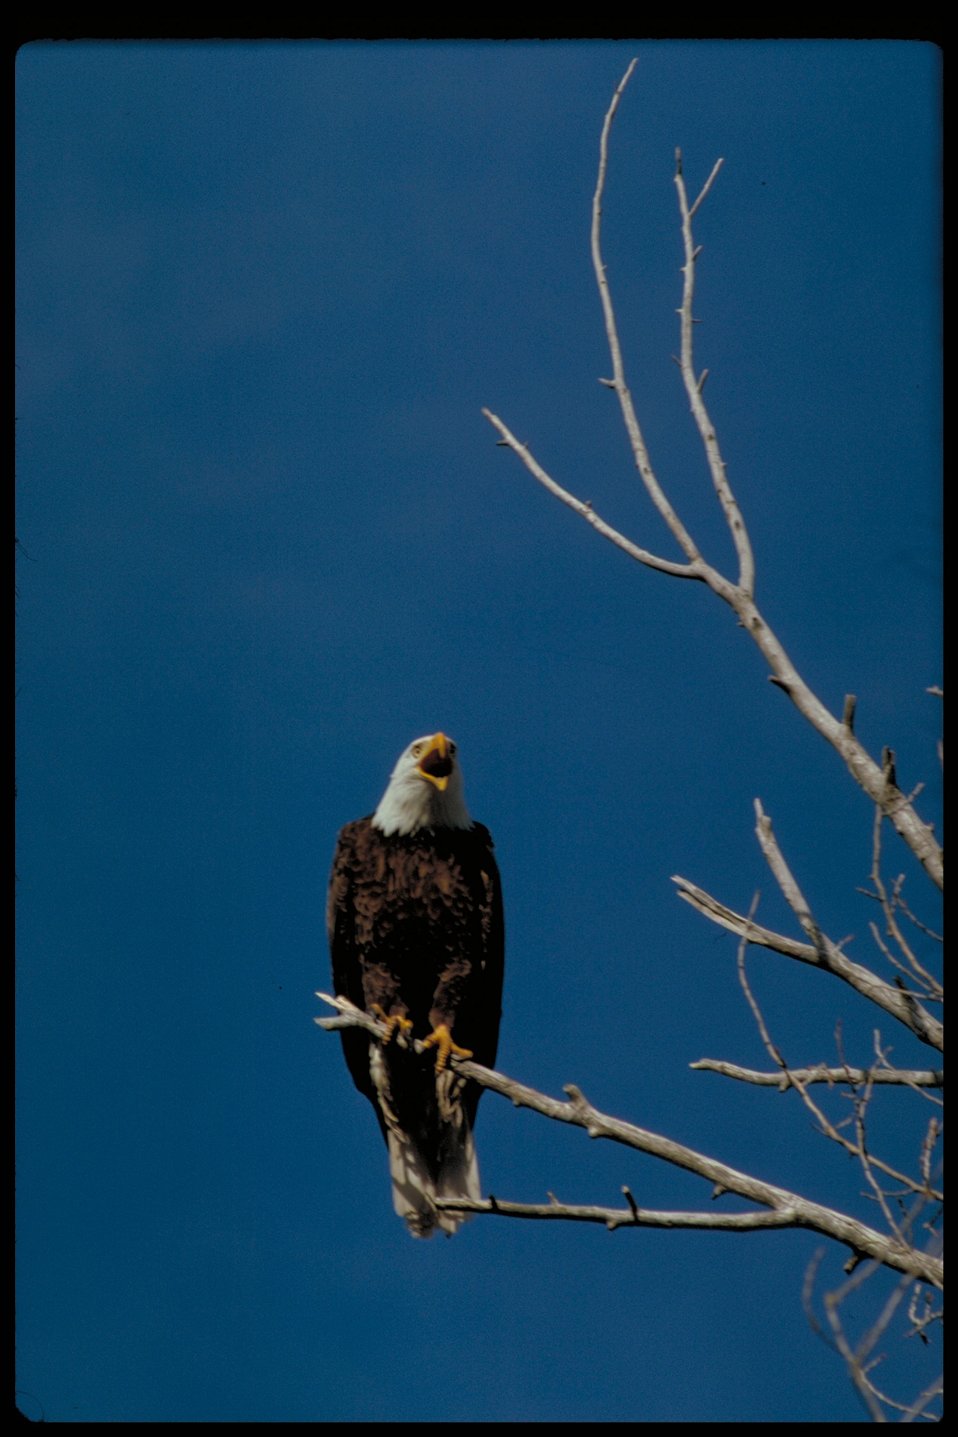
Bald Eagle in nest tree BOP Owyhee Field Office LSRD Lower Snake River District